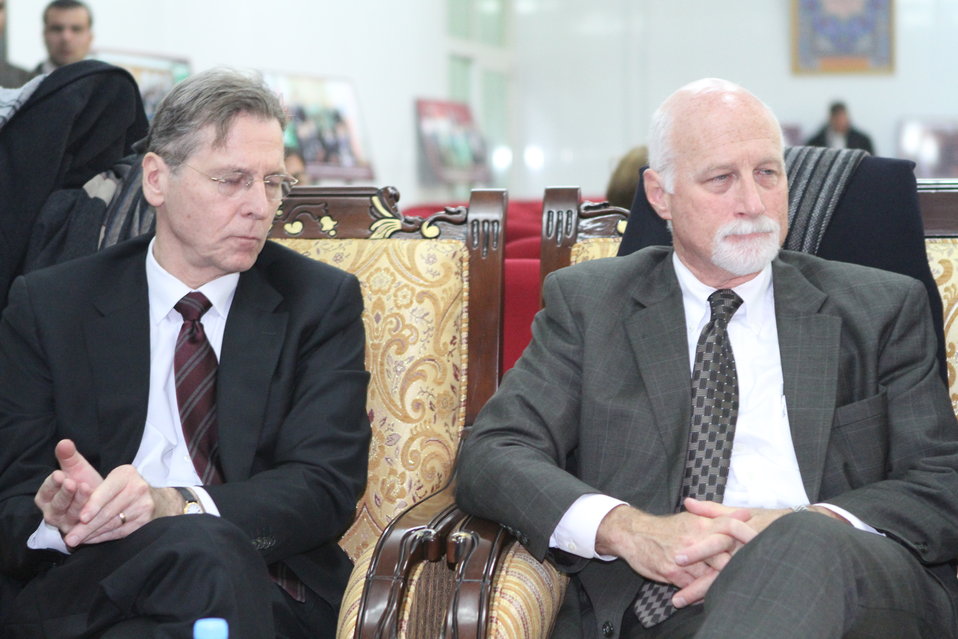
Afghanistan Final National Round of the 2013 Philip C.Jessup International Law Moot Court Competition